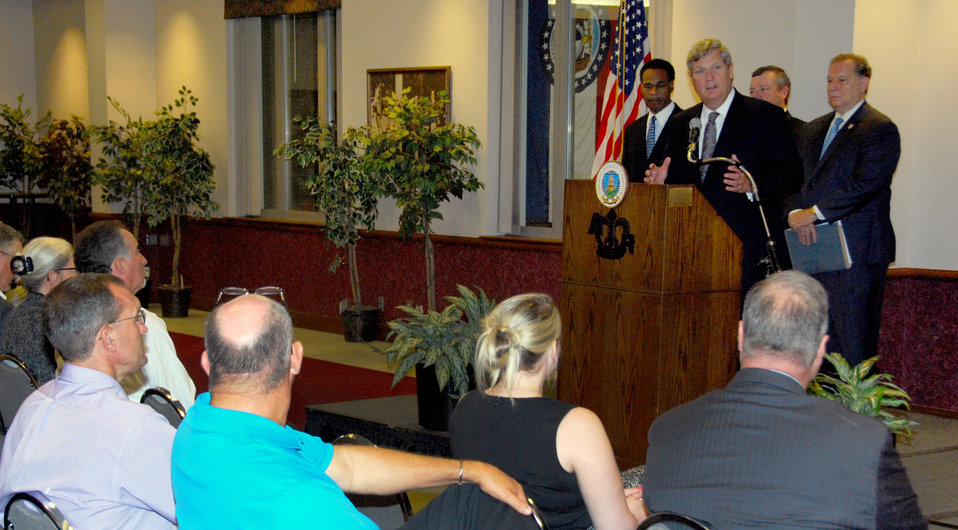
Agriculture Secretary Tom Vilsack makes remarks at the American Royal & Agri-business Council of KC, in Kansas City, MO., on Friday, June 21, 2013. On stage behind Sec Vilsack, from left: Congressman Emanuael Cleaver, 5th District Missouri; Randy Mooney, chairman, Dairy Farmers of America; Jim Heeter, KC Chamber of Commerce; Teresa Garza Ruiz, MO state representative and former Labor rep; Brian Hemann, Kansas dairy farmer; Bob Petersen, executive director, The Agricultural Business Council of Kansas City/ president and CEO of American Royal Association.